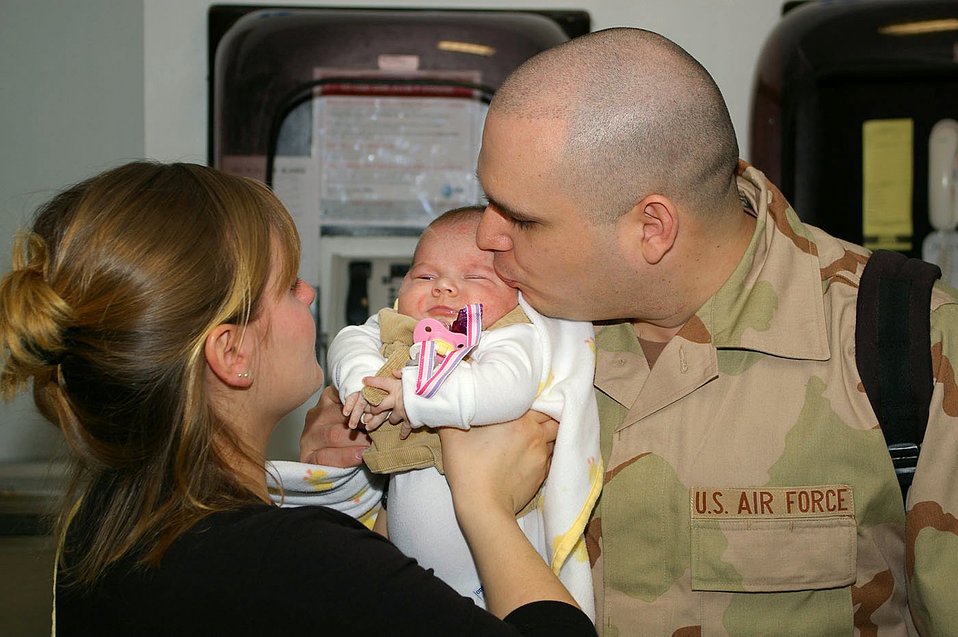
Airmen depart Mildenhall for Southwest Asia

Senior Airman Michael Rios gives his 7-week-old daughter, Alleigh, and wife, Cristy, a kisses goodbye at the passenger terminal before leaving on a deployment to Southwest Asia Jan. 23 from Royal Air Force Mildenhall, England. Airman Cardenas is assigned to the 100th Civil Engineer Squadron.